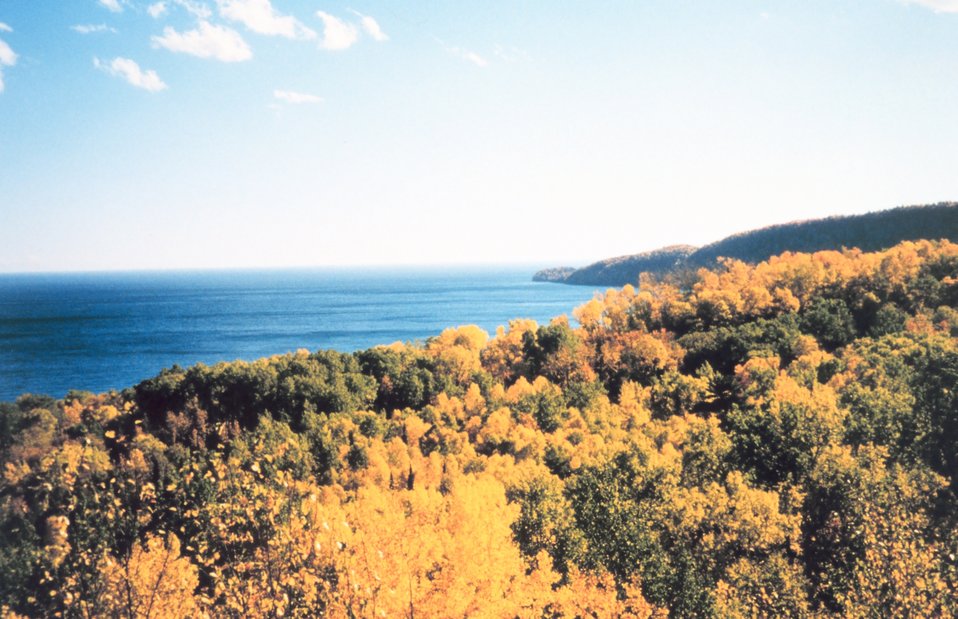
Houghton County